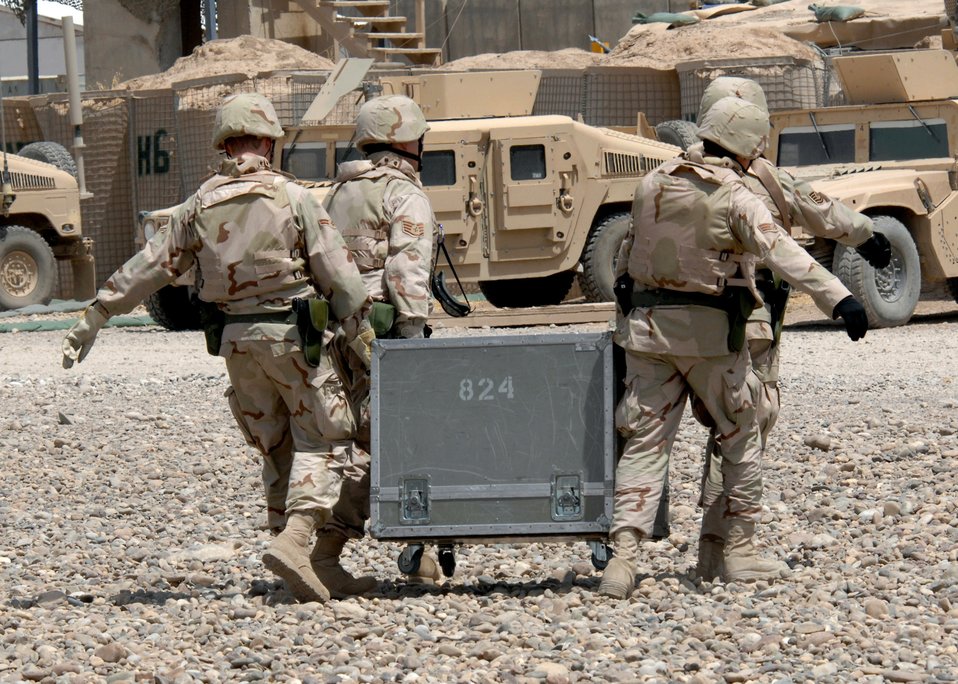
On tour in the AOR

Members of the U.S. Central Command Air Forces Band